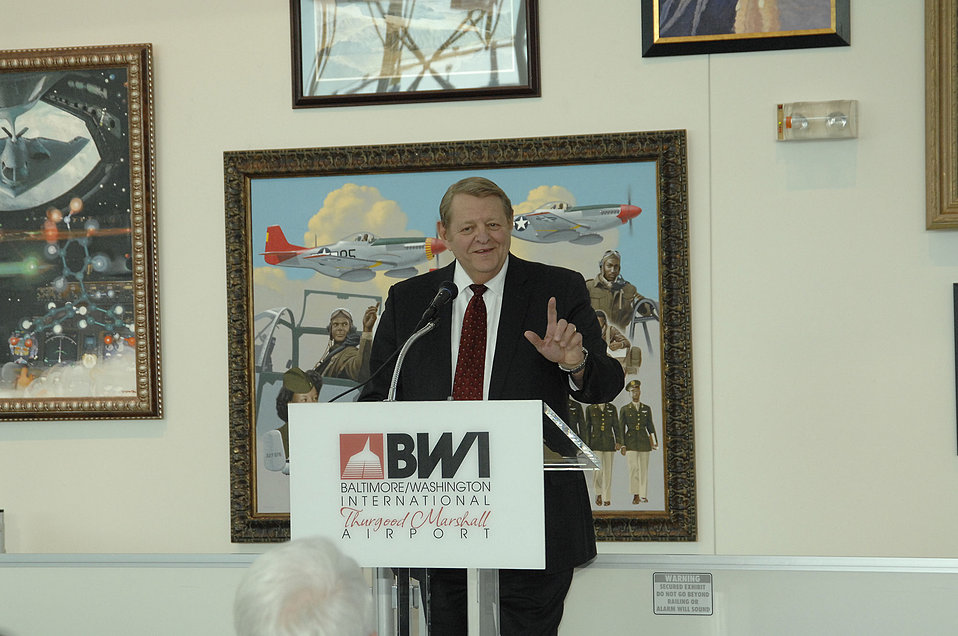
AF heritage, history on display at BWI airport

William Davidson, administrative assistant to the secretary of the Air Force, explains the significance of the Air Force Art Program exhibit's location Feb. 5 during the opening ceremony at the Baltimore Washington International Thurgood Marshall Airport. The exhibit, located in the international terminal, is in close proximity to the Air Mobility Command's passenger terminal, the departure and arrival location for a large majority of military members deploying overseas. It gives military members, their families and the general public an opportunity to learn about what Airmen, Soldiers, Sailors and Marines are accomplishing.